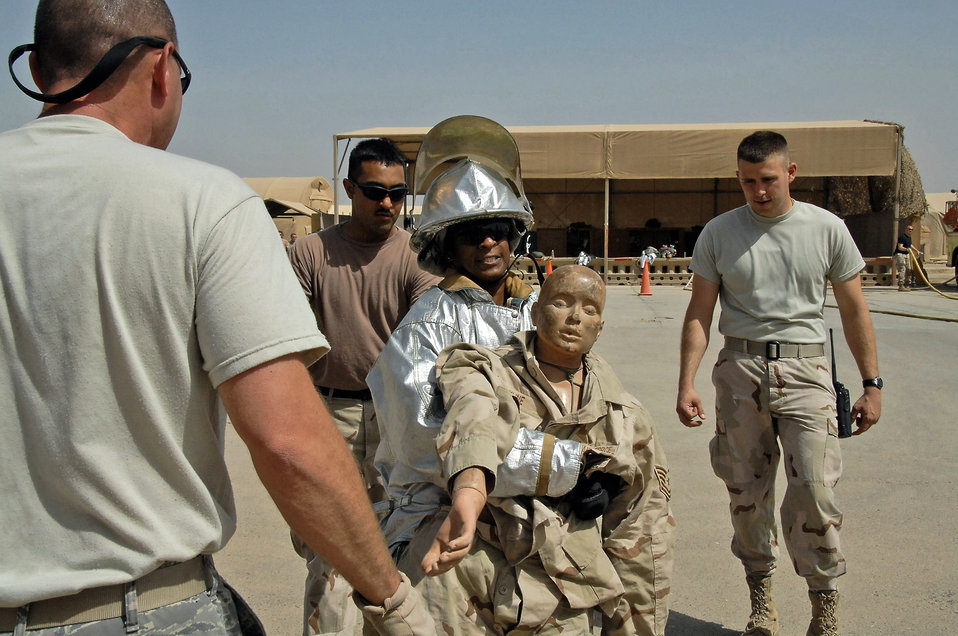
Airmen train Iraqis to save lives

Staff Sgt. David Parker, Senior Airman Peter Franco and Tech. Sgt. Duane Eivins watch an Iraqi firefighter compete in the